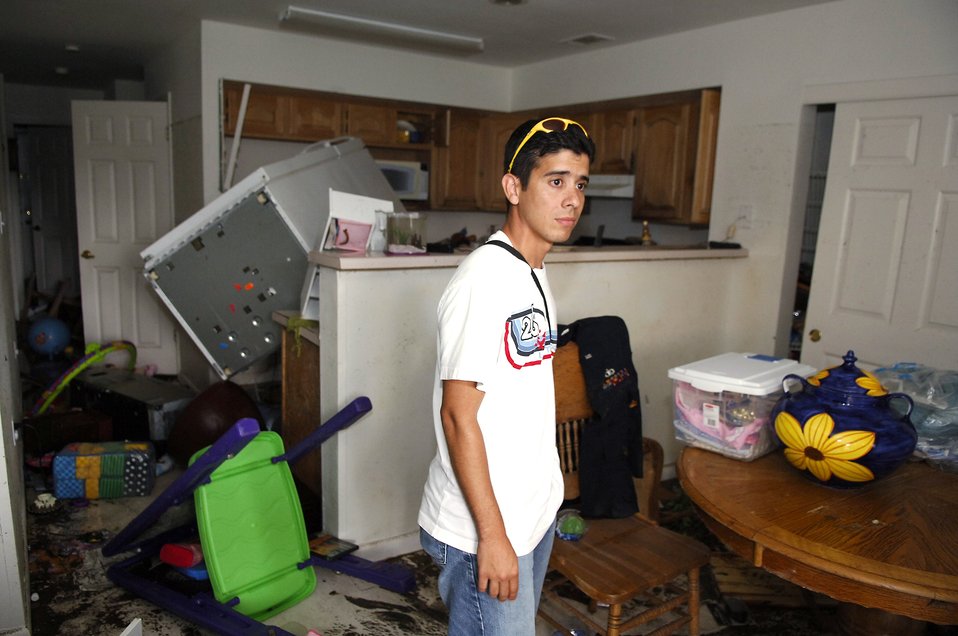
Displaced Airmen return to Keesler AFB for first time after hurricane

KEESLER AIR FORCE BASE, Miss. -- Staff Sgt. Jose Espola-Negron looks around his on-base house in disbelief. Most of his belongings were ruined from flooding in the aftermath of Hurricane Katrina. Before returning here from Eglin Air Force Base, Fla., where his family evacuated to before the storm, the only information he had about his home was that it had taken in a lot of water. During the highest point of the flooding, more than 6 feet of water was in his home. Sergeant Espola-Negron is an air traffic control instructor with the 334th Training Readiness Squadron here.